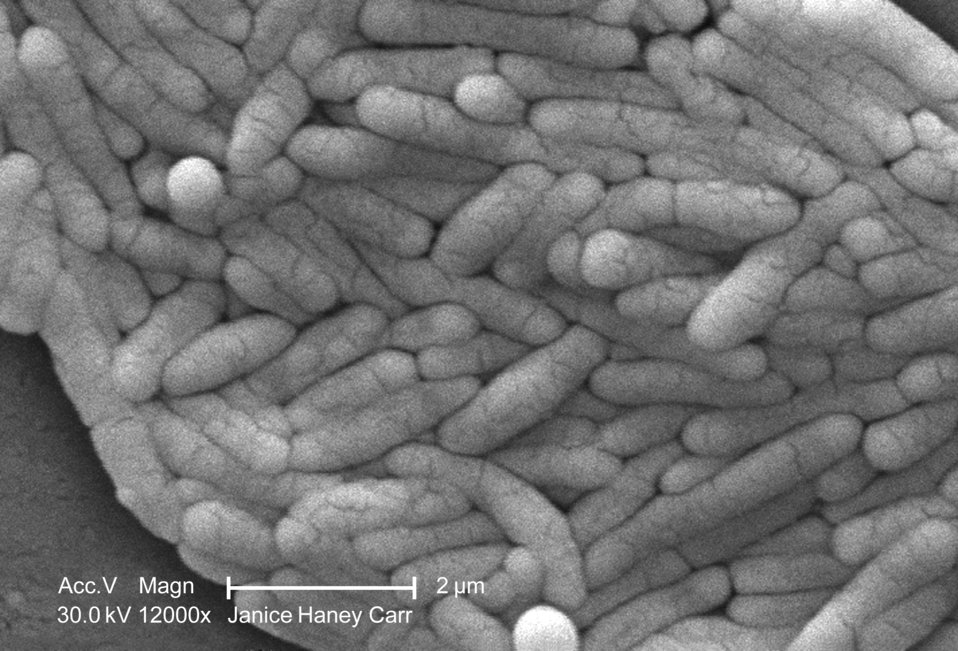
Under a very high magnification of 12000X, this scanning electron micrograph (SEM) revealed the presence of a large grouping of Gram-negative Salmonella typhimurium bacteria that had been isolated from a pure culture.